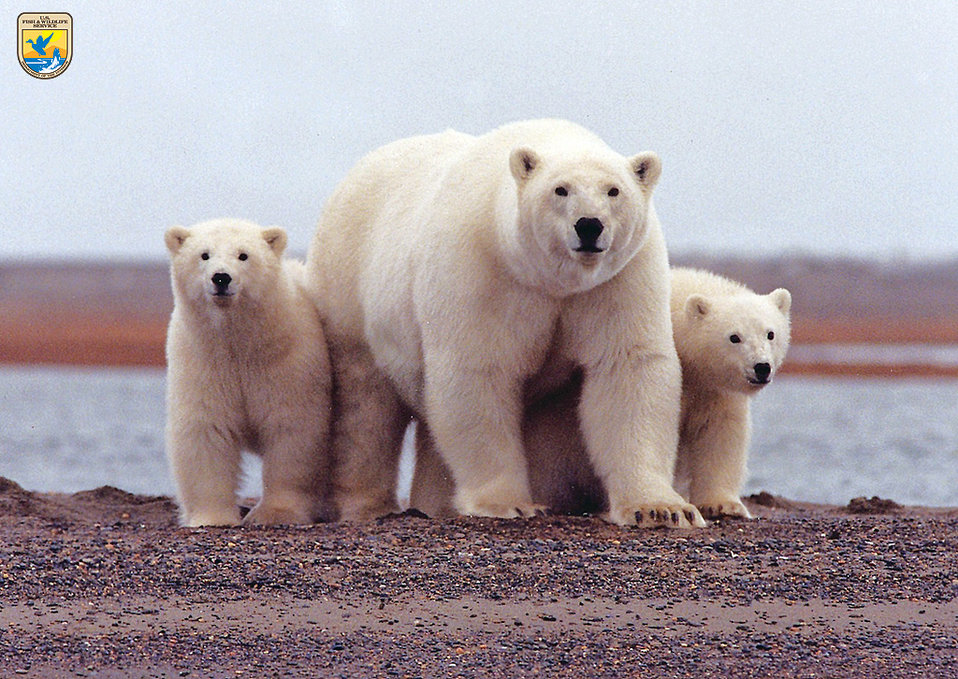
Polar bears, Arctic National Wildlife Refuge

A polar bear keeps close to her young along the Beaufort Sea coast in Arctic National Wildlife Refuge.